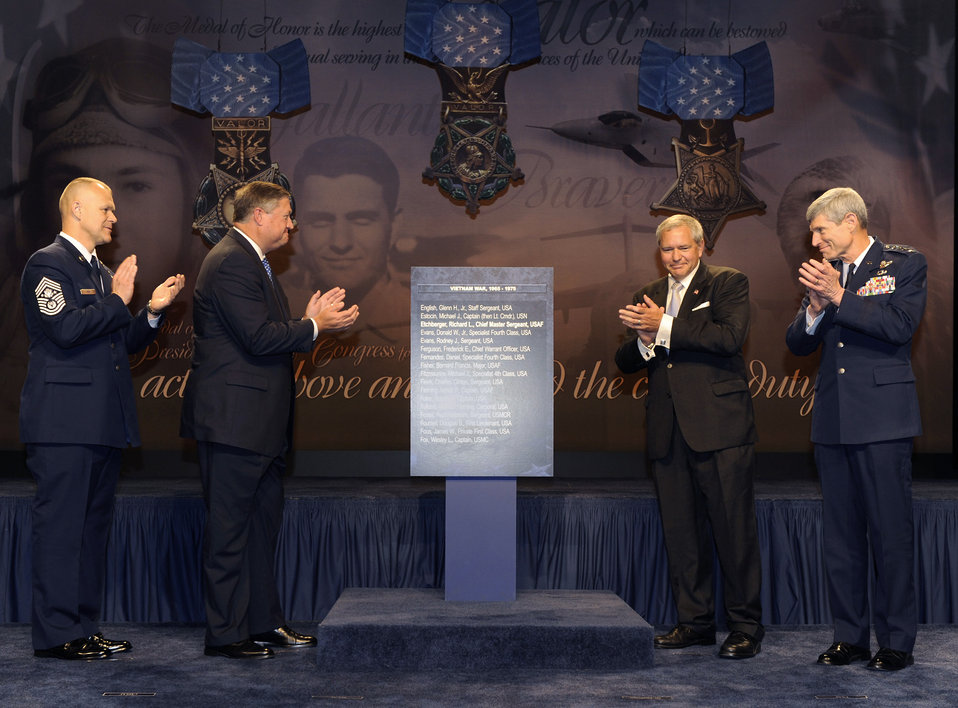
Hall of Heroes

(From left) Chief Master Sgt. of the Air Force James A. Roy, Secretary of the Air Force Michael Donley, Cory Etchberger, son of Medal of Honor recipient Chief Master Sgt. Richard L. Etchberger, and Air Force Chief of Staff Gen. Norton Schwartz unveil the new Pentagon Hall of Heroes wall panel adding Chief Etchberger's name during an induction ceremony Sept. 22, 2010, in the Pentagon.